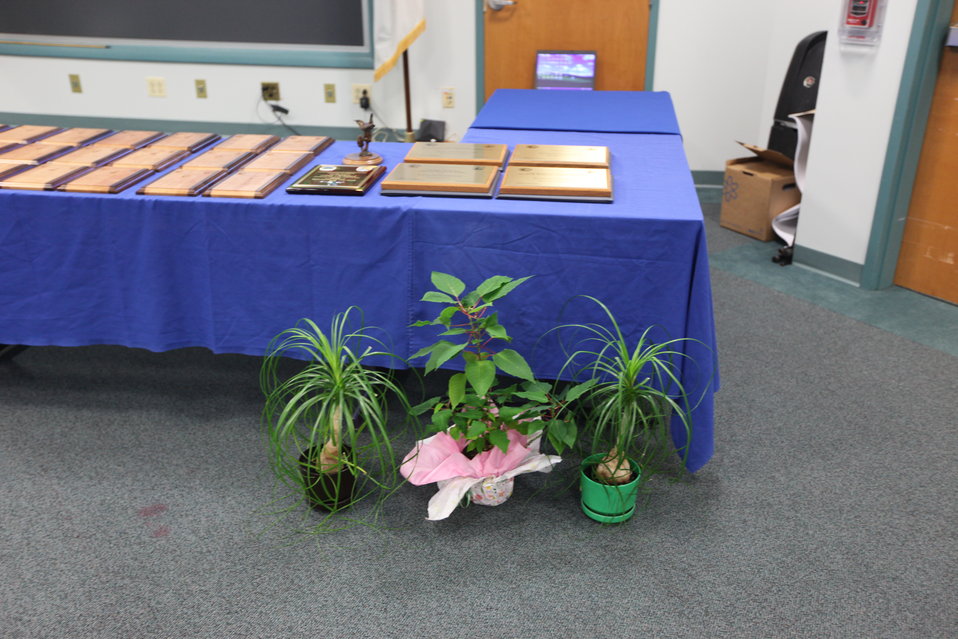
Northeast Region Employee Appreciation Awards